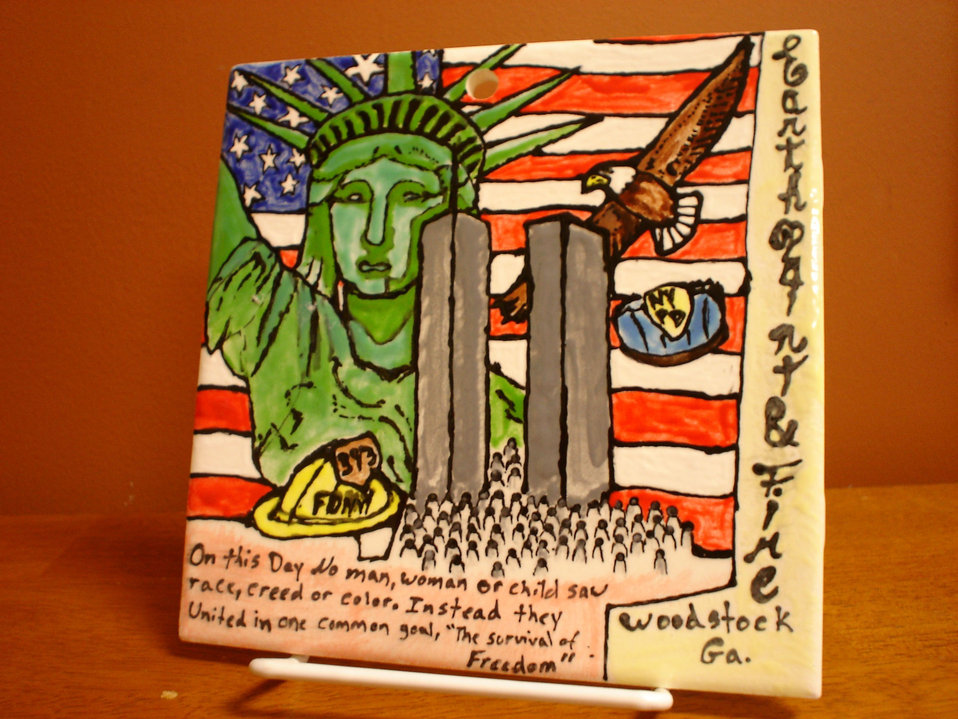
Building a wall of hope at Ground Zero

This tile, created by Gerard Reheiser, is on display at Ground Zero. Mr. Reheiser is a firefighter at Dobbins Air Force Base, Ga.